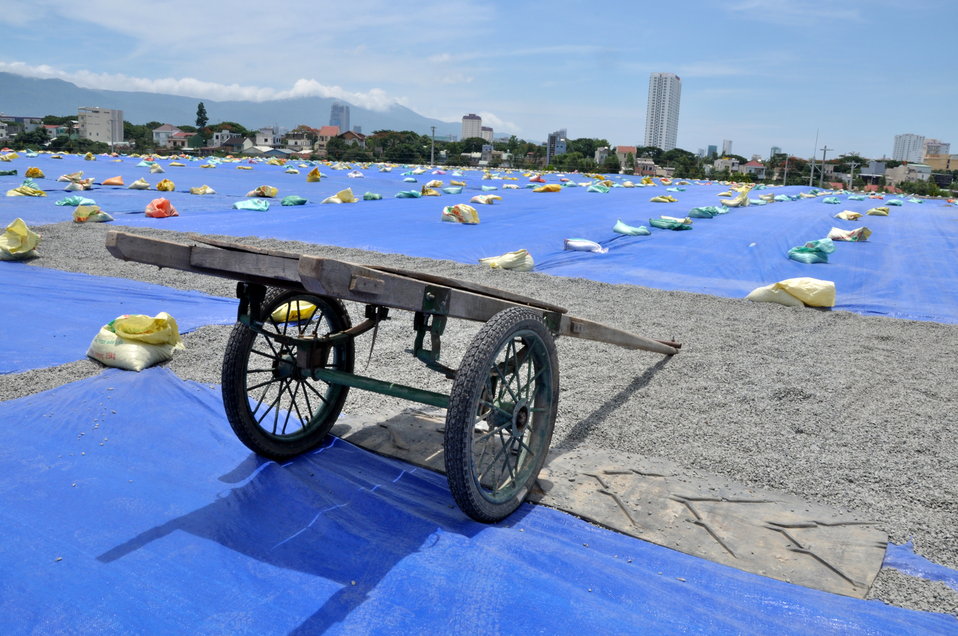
USAID Dioxin Contamination Project Progress: Containment Structure

Progress at the Environmental Remediation of Dioxin Contamination Project at Danang Airport

July 16, 2013